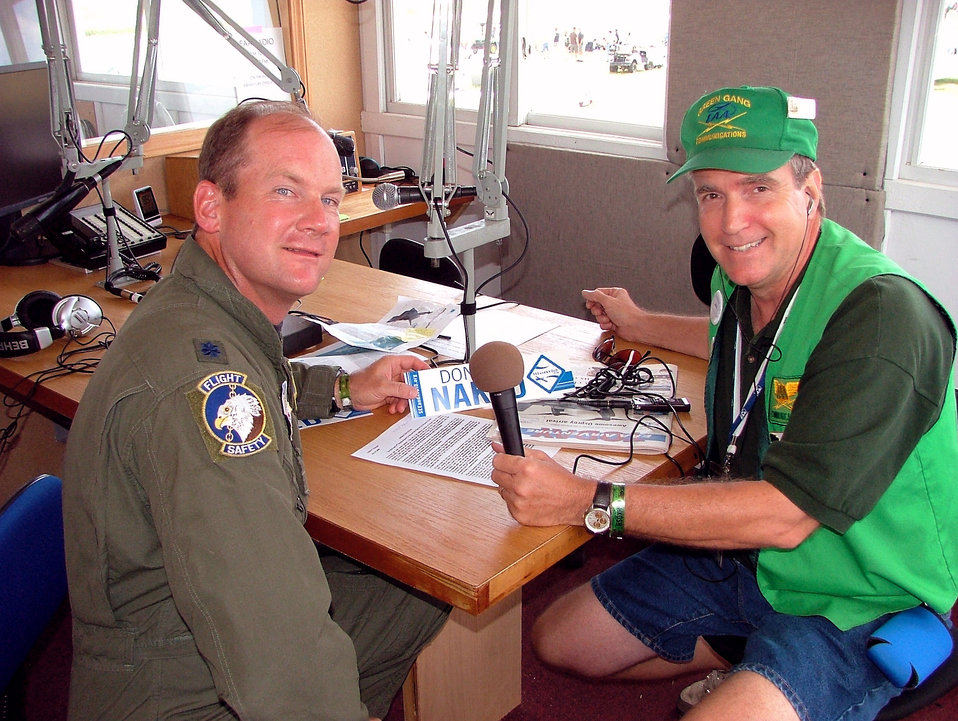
Flight safety

Rob Sturgeon, a radio broadcaster with the Experimental Aircraft Association, interviews Lt. Col. Ned Linch, the 12th Air Force (Air Forces Southern) chief of flight safety, during the EEA's Oshkosh Air Venture airshow. More than 540,000 civilians and military pilots from around the globe gathered in Oshkosh, Wis., July 31 through Aug. 3 for the event. The colonel was attending the airshow to educate general aviation and civilian pilots on midair collision avoidance and on the need for flight safety and planning awareness.